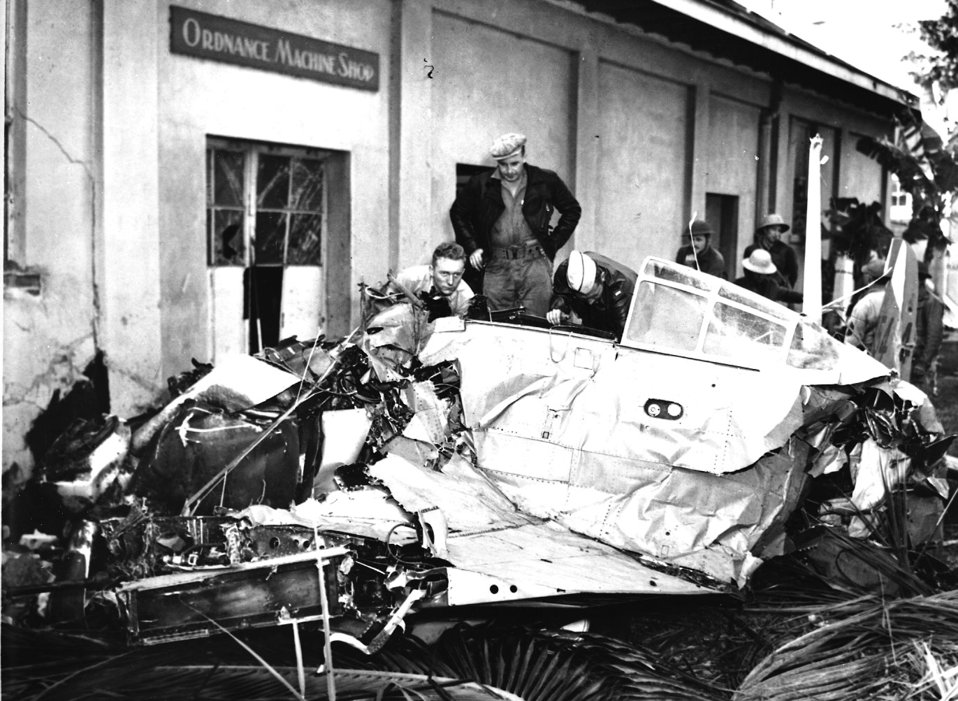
Japanese Zero Wreckage

Wreckage from a Japanese Zero found at Fort Kamehameha in Honolulu, Hawaii, following the Dec. 7 attacks.